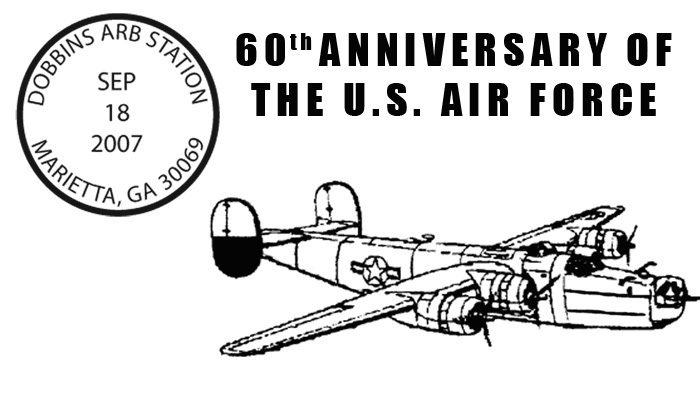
Air Force celebrates 60th with postmark

The U.S. Postal Service and the 94th Airlift Wing will honor the Air Force with a 60th Anniversary of the Air Force Postmark from Sept. 18 to Oct. 18 at Marietta, Ga.